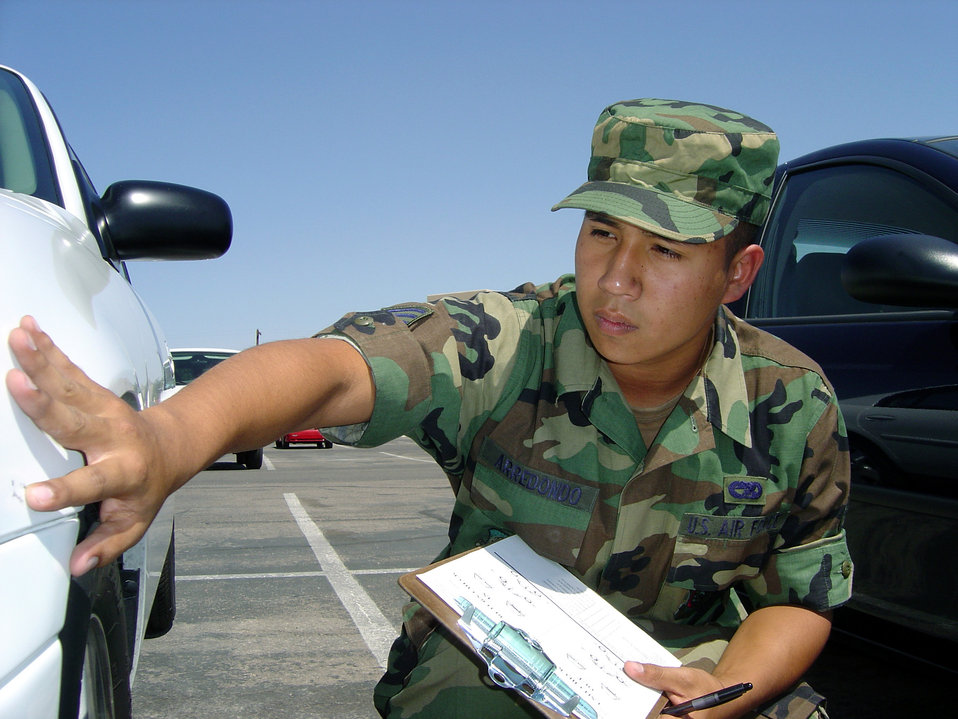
Experiment 2004

NELLIS AIR FORCE BASE, Nev. (AFPN) -- Senior Airman Tony Arredondo inspects an incoming vehicle being used during the Joint Expeditionary Experiment 2004 here. Reserve Airman Arredondo is a transportation specialist from March Air Reserve Base, Calif. JEFX 04 is an Air Force chief of staff-sponsored experiment that assesses new and emerging technologies.